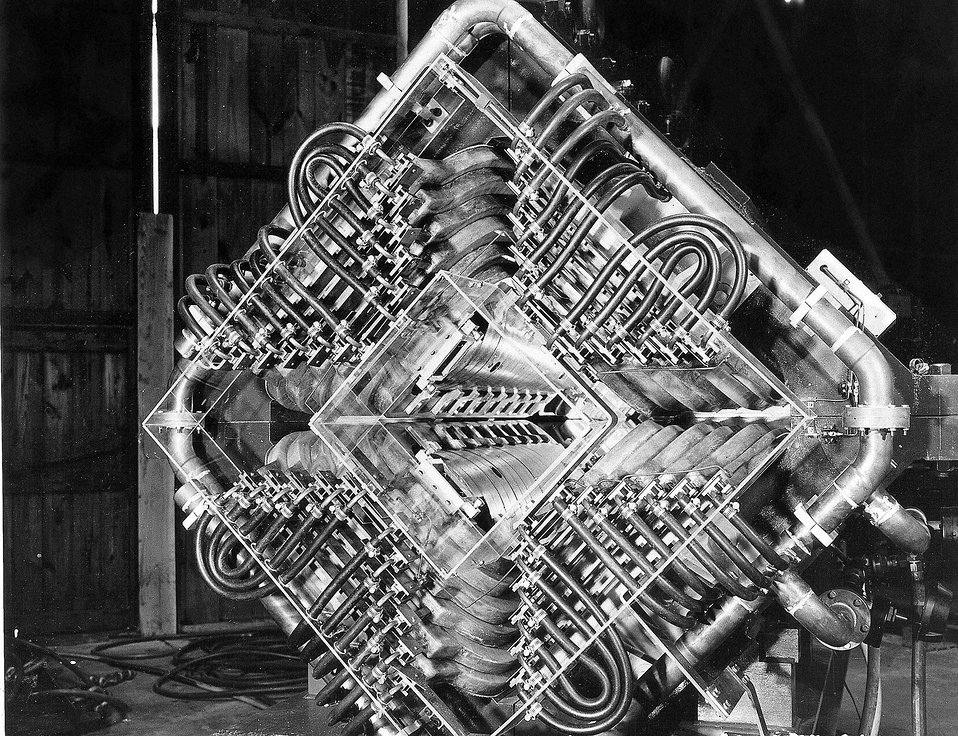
Front view of the strong focusing magnet used to narrow down external beams of charged nuclear particles which emerge from the Cosmotron (not shown) at Brookhaven National Laboratory. c. 1957